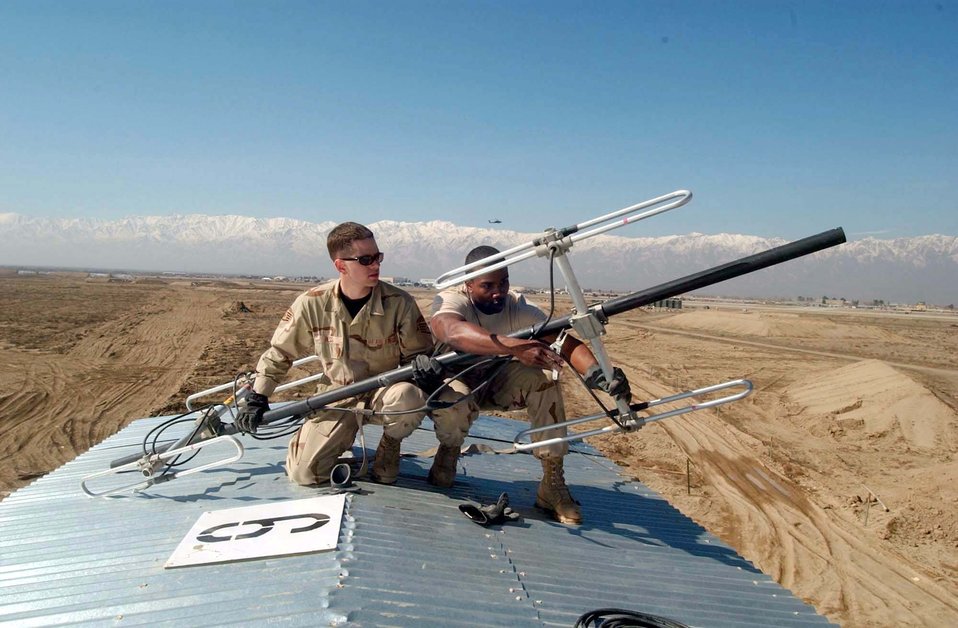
Tuning in

BAGRAM AIR BASE, Afghanistan -- Staff Sgts. Vincent Bess (left) and Andre Locust install a radio-communications antenna for a secondary repeater for the security forces squadron here. The repeater increased radio coverage so that security forces can now communicate with each other anywhere on the base. Both Airmen are assigned to the 455th Expeditionary Operations Group's expeditionary communications flight, and they are deployed from the Cryptologic Systems Group at Lackland Air Force Base, Texas.